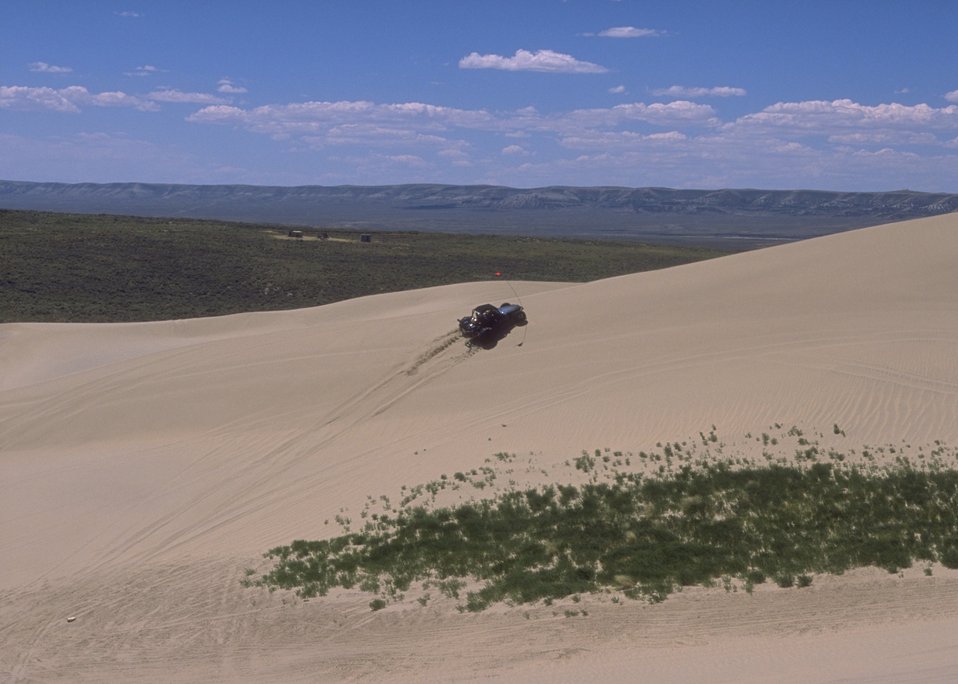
Sand Dunes OHV Area, Rock Springs Field Office